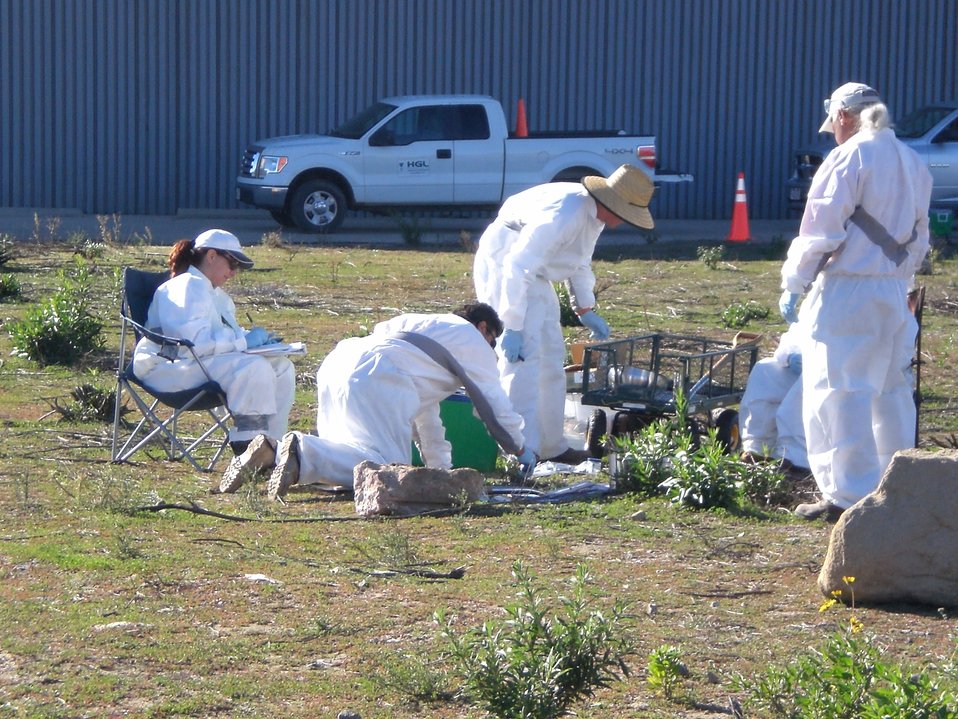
Recovery Act-Funded Study Assesses Contamination at Former Test Site in California

Workers collect soil samples for the EPA study.

Under an interagency agreement with DOE, the Environmental Protection Agency (EPA) is conducting
a study at Santa Susana Field Laboratory (SSFL) Area IV and the Northern Undeveloped Land. DOE’s Energy Technology Engineering Center (ETEC) is located in Area IV. Results of the study will guide cleanup decisions for this portion of SSFL, which was once used for a broad range of energy related research and development.